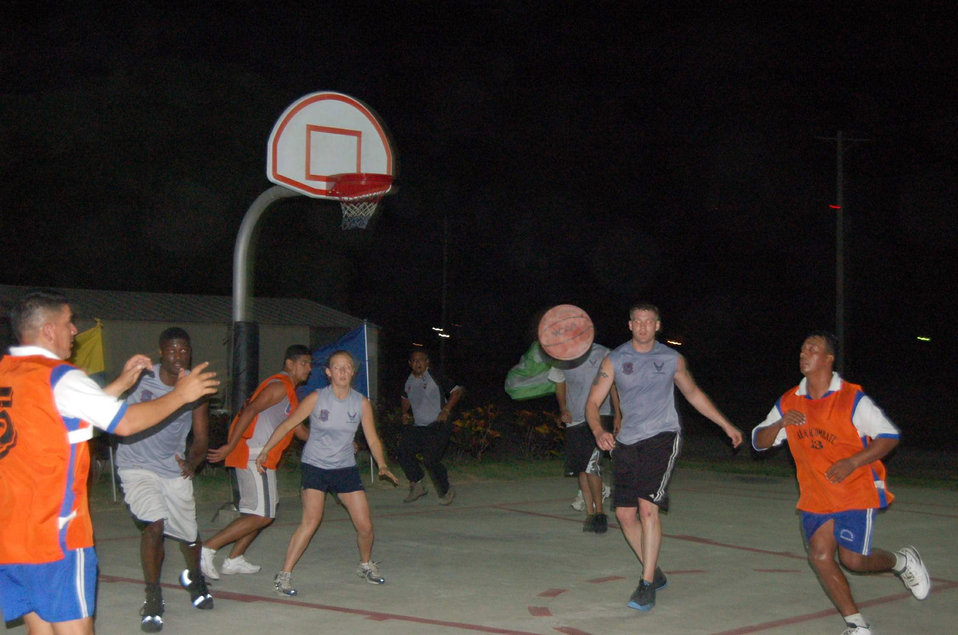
Ecuadorian air force edges U.S. Air Force 26-25

The Ecuadorian air force team squares off against the U.S. Air Force basketball team during a championship basketball game Dec. 9 at Forward Operating Location Manta in Ecuador. Nearly 100 fans cheered on their favorite team, as the Ecuadorian air force pulled out a 26-25 victory.